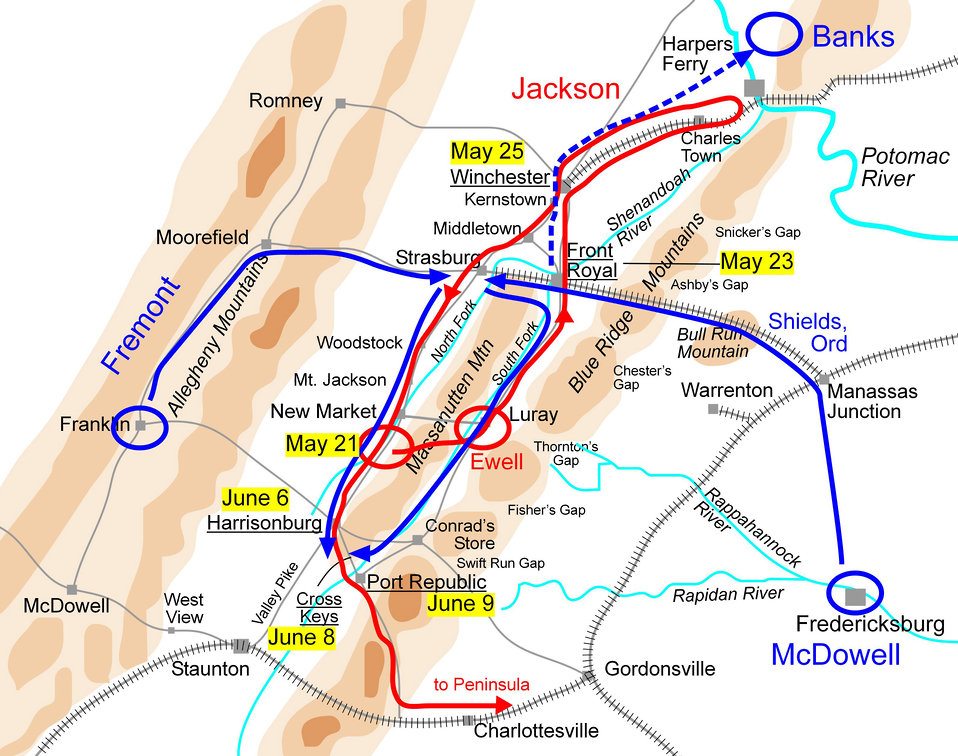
Jackson Valley Campaign Part2